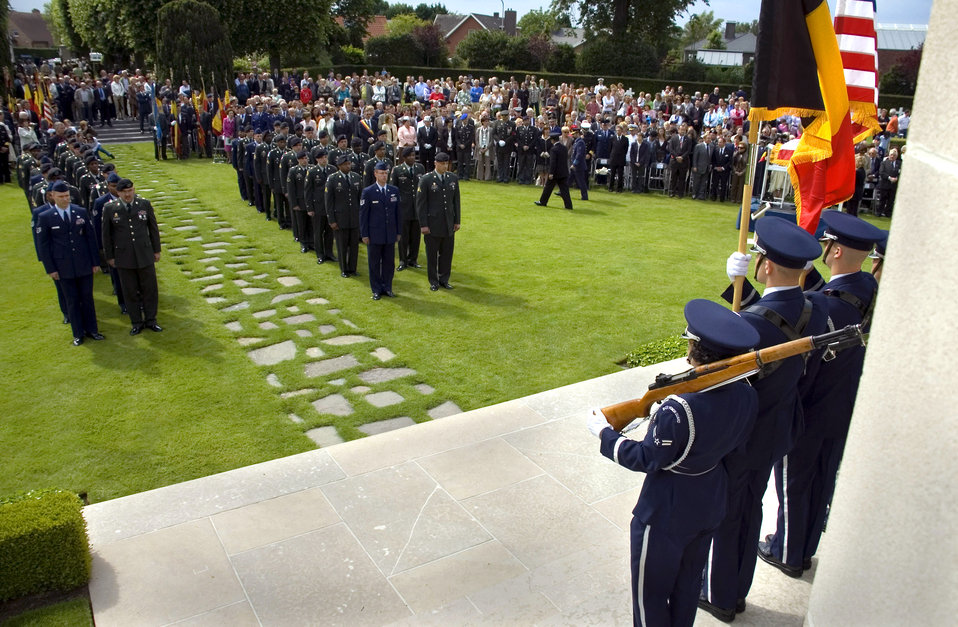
USAFE leader honors fallen heroes at Flanders Field

American servicemembers gather in formation on Memorial Day 2007 at Flanders Field, Begium. The military members were on hand to pay tribute to the 368 American servicemembers who died in battle while liberating Belgium during World War II and are buried here.